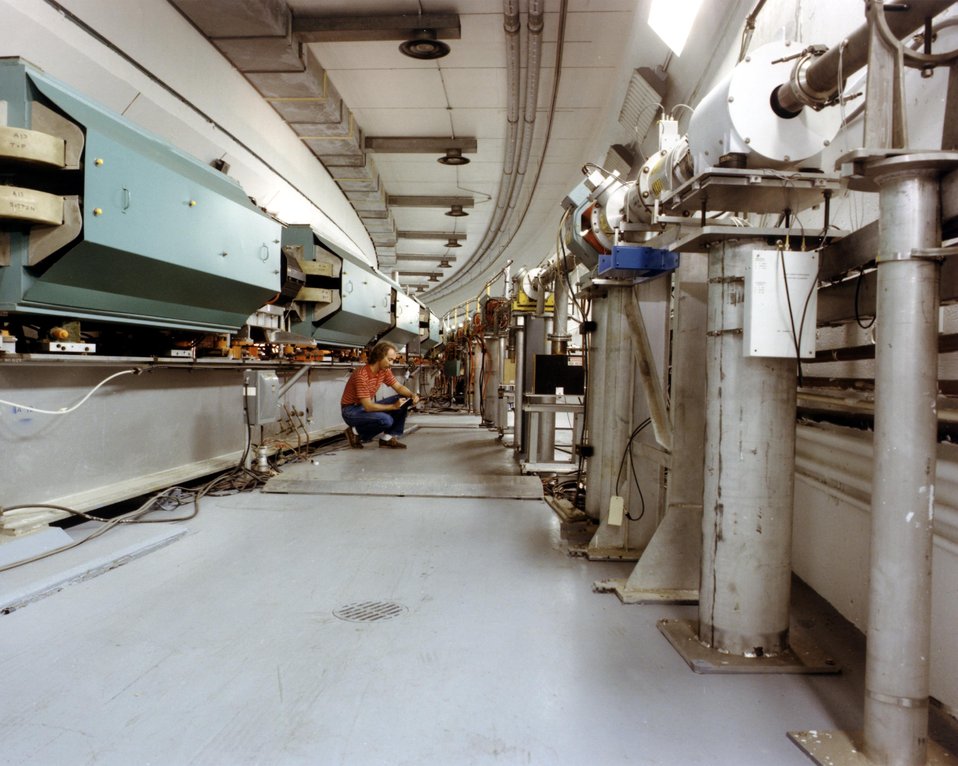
VIEW OF THE AGS RING TUNNEL.

THE AGS ACCELERATES PROTONS (THE NUCLEI OF HYDROGEN ATOMS) TO AN ENERGY OF 30 BILLION ELECTRON VOLTS (GEV) TO PROVIDE PROJECTILES FOR SMASHING THE NUCLEUS OF OTHER ATOMS. THE ENORMOUS ENERGY RELEASED IN THIS COLLISION SCATTERS THE PRIMARY PROTONS AND THE CONSTITUENTS OF THE TARGET NUCLEUS AND ALSO RESULTS IN THE PRODUCTION OF NEW UNSTABLE SHORT LIVED PARTICLES NOT FOUND IN ORDINARY MATTER. THE STUDY OF THE SCATTERING AND PRODUCTION PROCESSES PROVIDES INFORMATION ABOUT THE CONSTITUENTS OF THE PROTON.